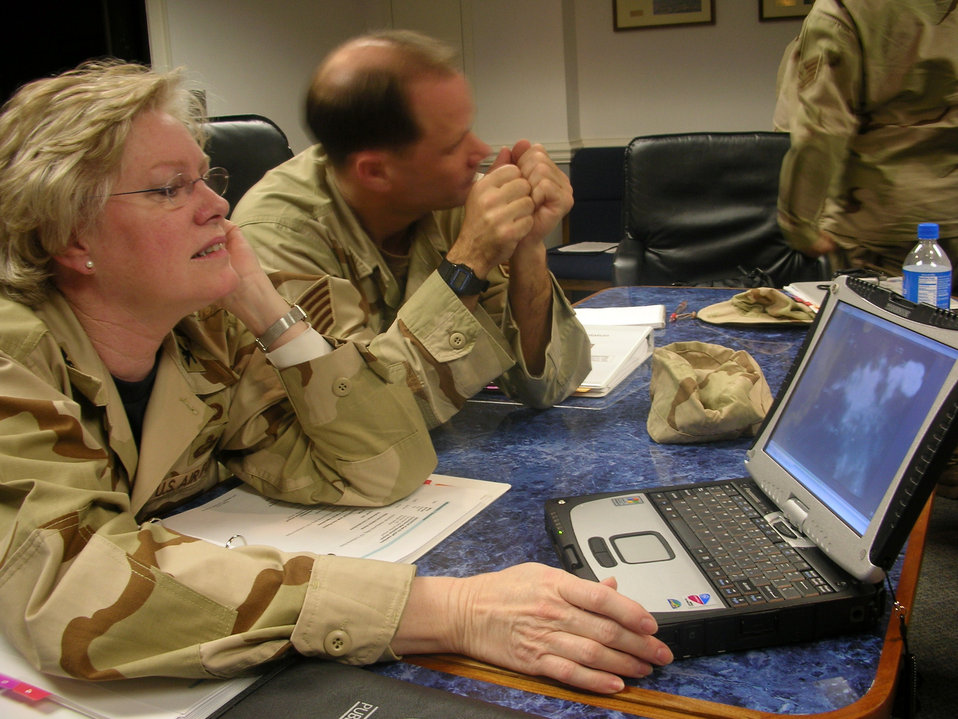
Deployment training

SHAW AIR FORCE BASE, S.C. (AFPN) -- Col. Ann Cottongim watches a streaming tactical video used in targeting an insurgent. The